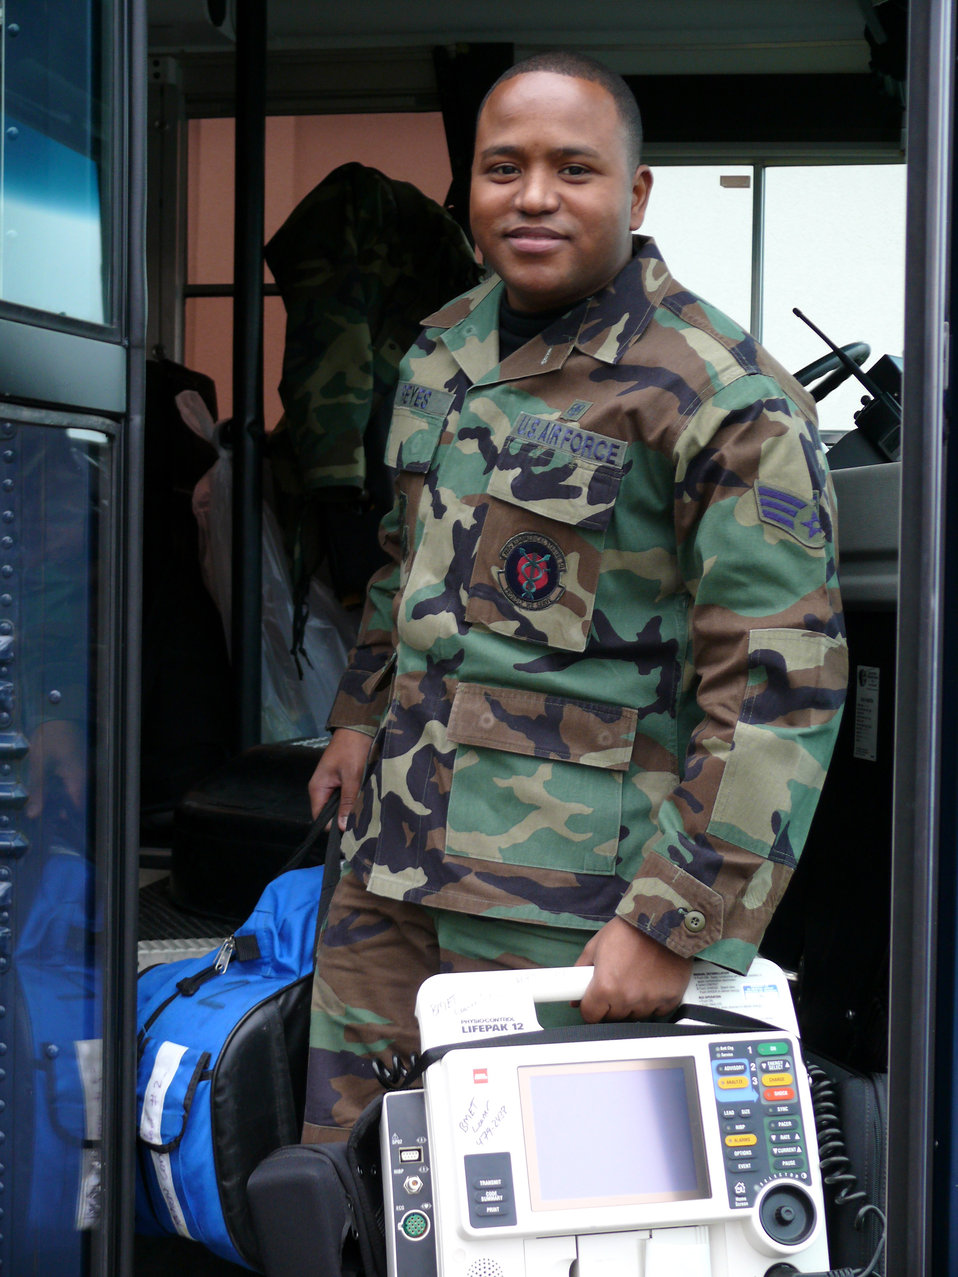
Serving through the season: Senior Airman Jose Reyes

Senior Airman Jose Reyes is an Air Force Reserve medical technician deployed to Ramstein Air Base, Germany.